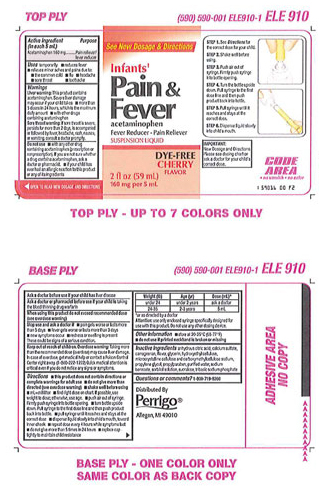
Recalled - Acetaminophen infant suspension liquid

November 1, 2013 – Product Recall – Perrigo Initiates Nationwide Voluntary Product Recall of Acetaminophen Infant Suspension Liquid, 160 Mg/5 Ml, Due to a Potential Defect with the Co-packaged Oral Syringe.